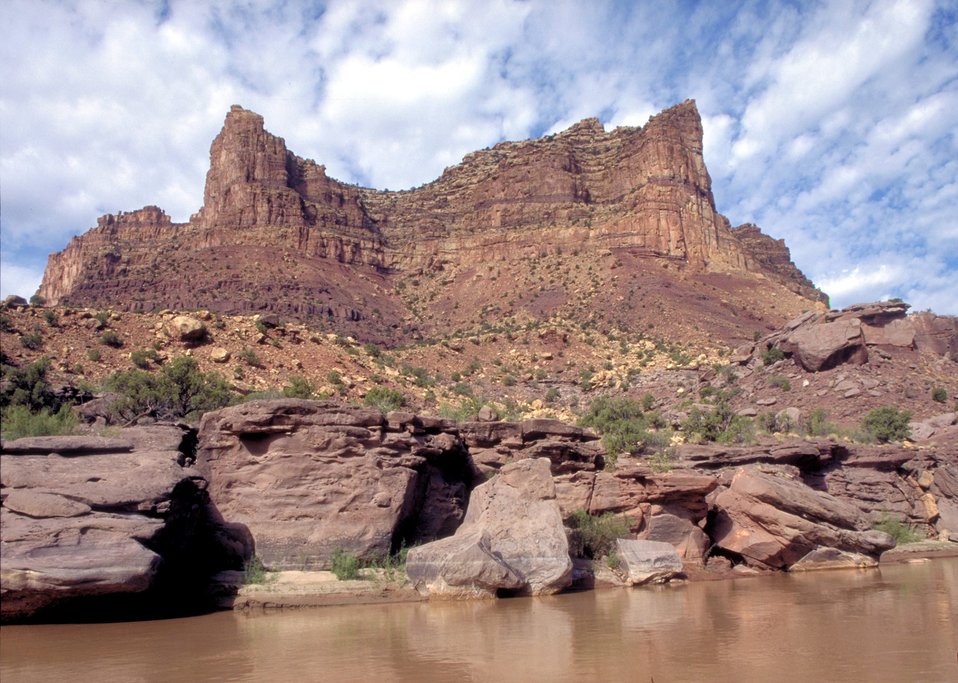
Desolation/Gray Canyons near Price, Utah.